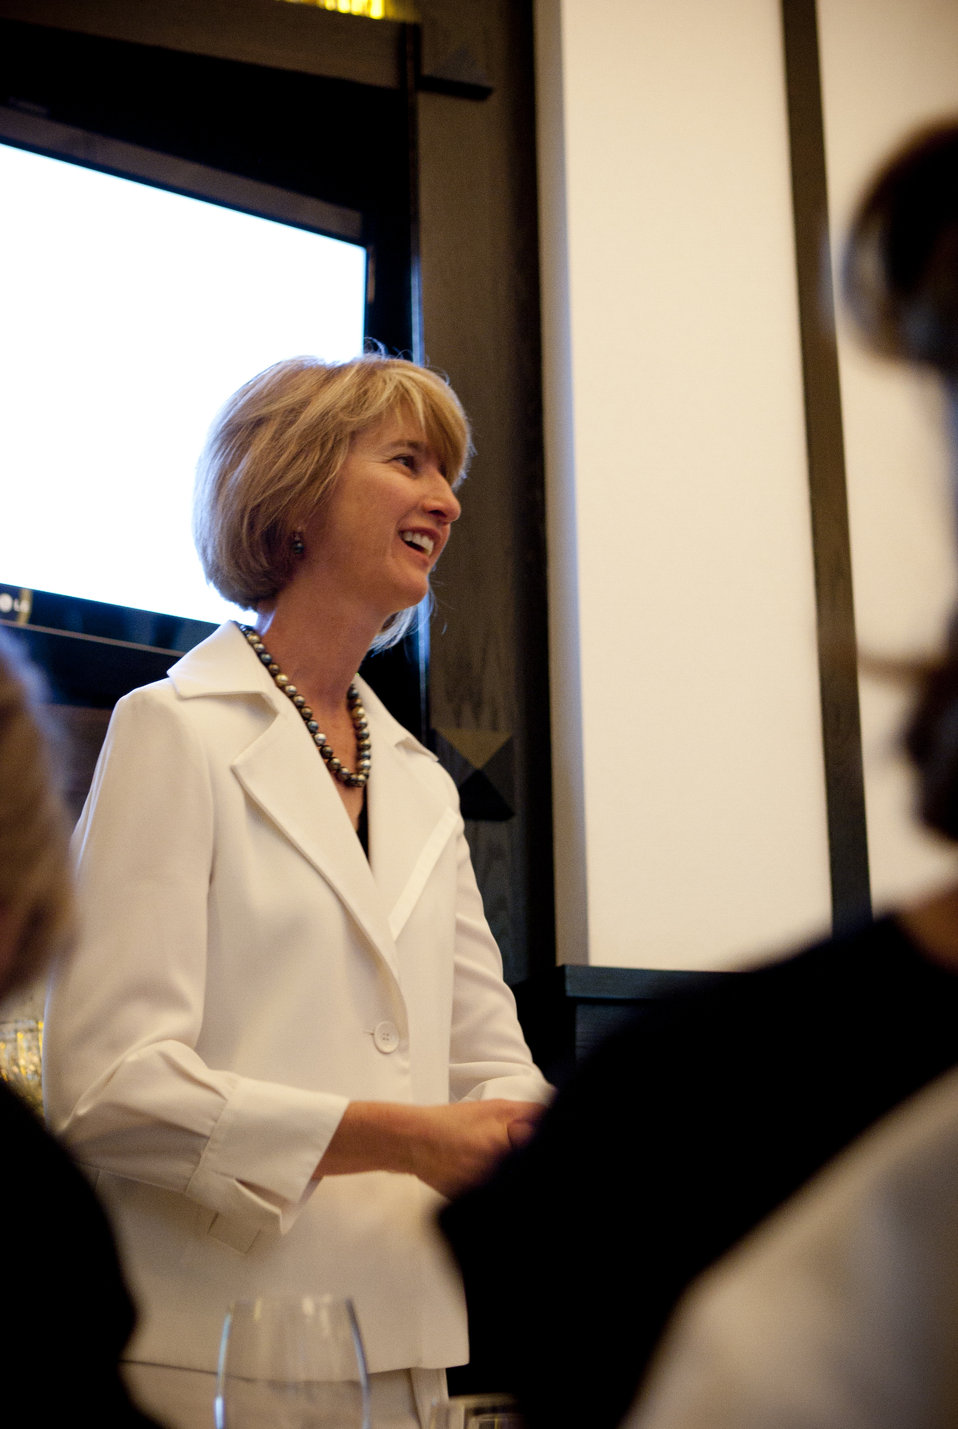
WomenandEnergy 46